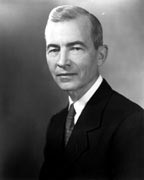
Donald A. Quarles

1950's -- Donald A. Quarles's tenure as the fourth secretary of the Air Force was marked by an increased emphasis on research and development. Quarles was the first Air Force secretary with a strong formal, scientific background and he devoted much of his attention to technological advances. Like the first air secretary, Stuart Symington, Quarles was the right man at the right time.